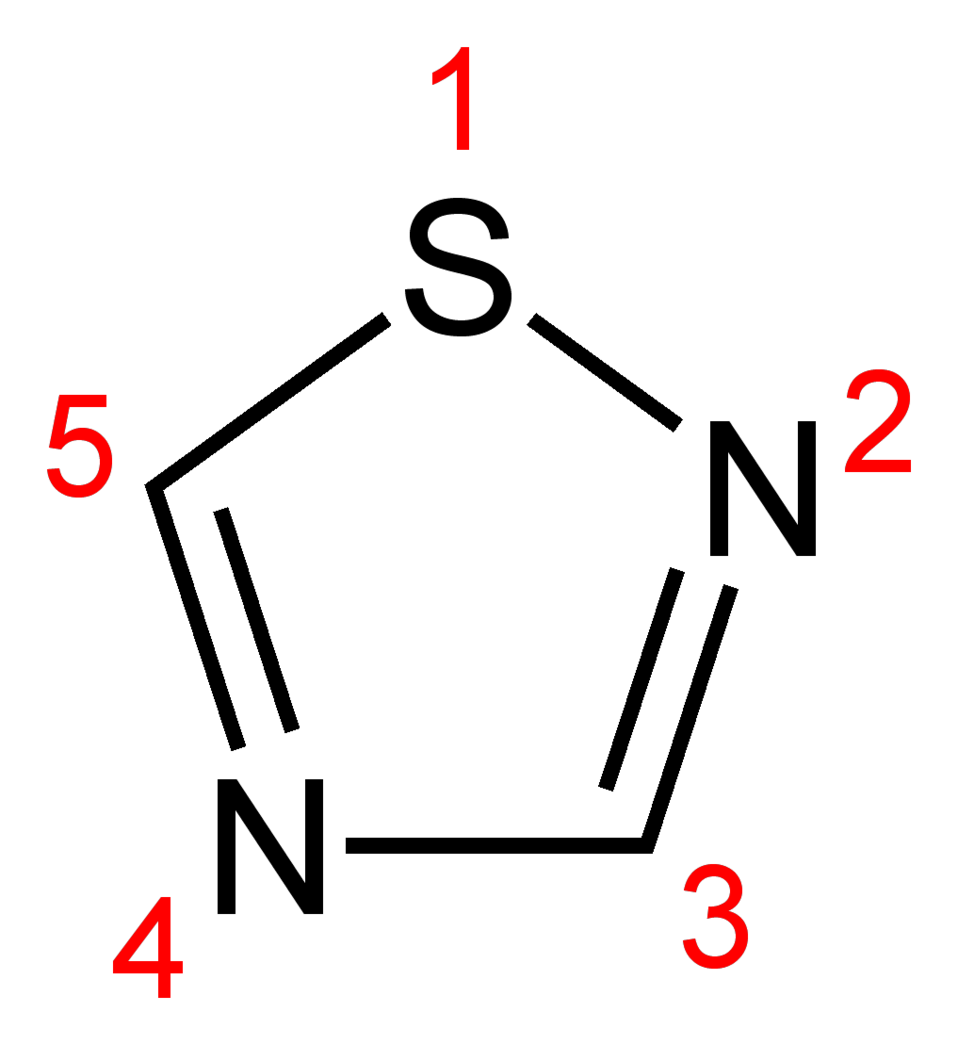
Numbered skeletal formula of 1,2,4-thiadiazole, C2H2N2S